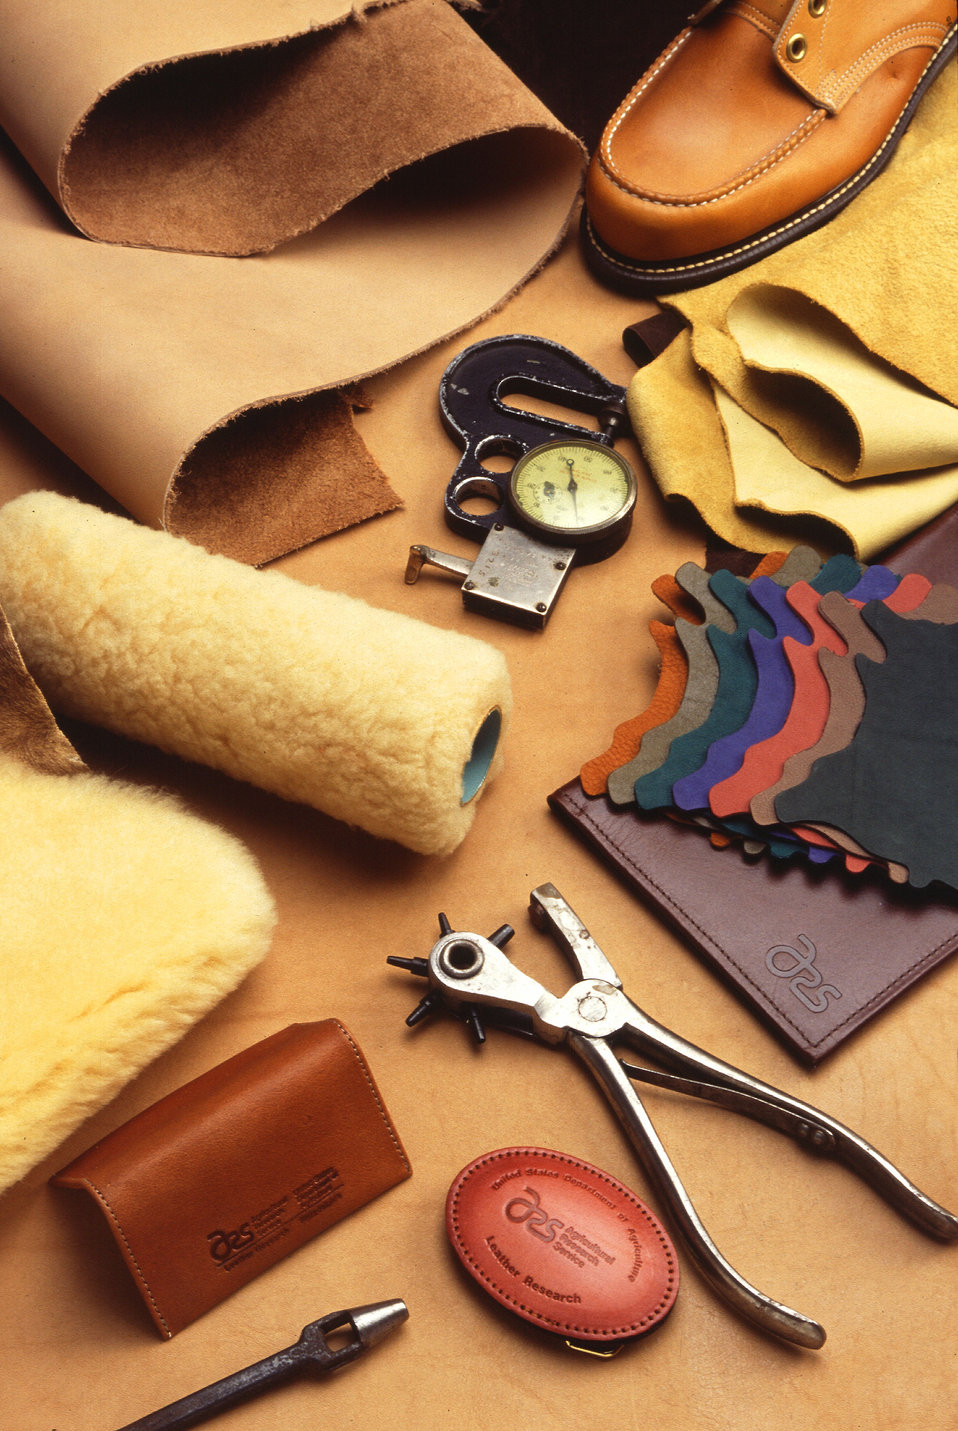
Leather-making is an ancient craft, but it's met up with some state-of-the-art technology. U.S. Department of Agriculture (USDA) Agriculture Research Service (ARS) researchers found that electron beam radiation can replace the salt solutions now used to kill bacterial growth-much to the benefit of the environment. USDA ARS scientists have found a way to reduce the number of poor-quality hides that make their way into leather processing by using laser light-scattering photometry that evaluates hides according to the orientation of their fibers. Another high-tech detective work has tracked down a cause of shoemaking woes. One type of leather, which broke under the stress of manufacture, was found to have a genetic defect that's specific to certain Hereford cattle. USDA ARS researchers identified cockle, a seasonal flaw of sheepskin, as the work of a parasitic insect called keds. Once the scientists realized that keds not only lowers the value of the skin but also causes sheep to grow more slowly, sheep farmers began treating their herds to control infestations.